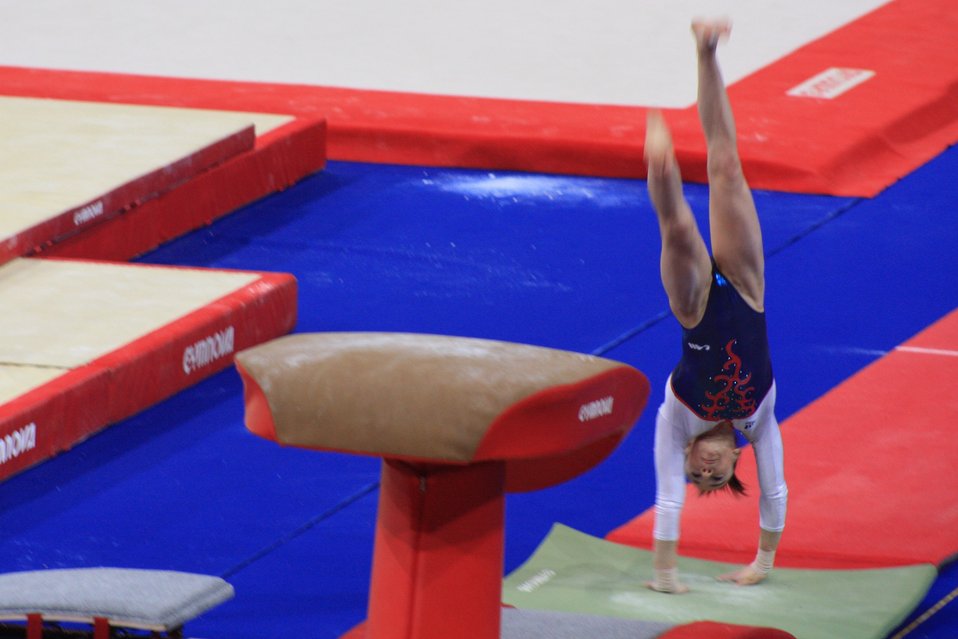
Fran√ßais†: Youna Dufournet prend sa premi√®re impulsion sur les mains au sol, en qualifications du saut de cheval, aux 17e Internationaux de France (2010).